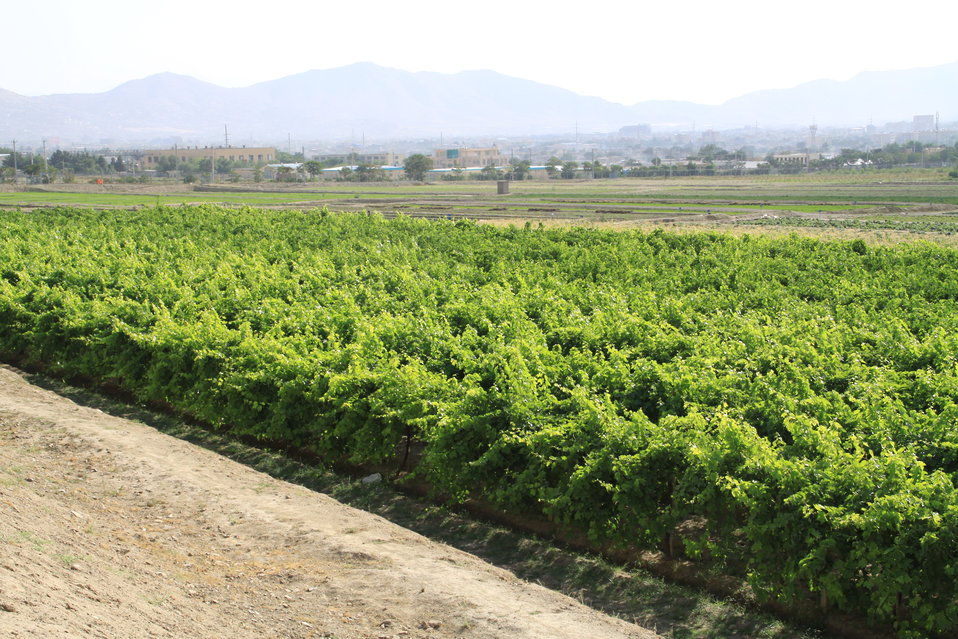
Badam Bagh Farm